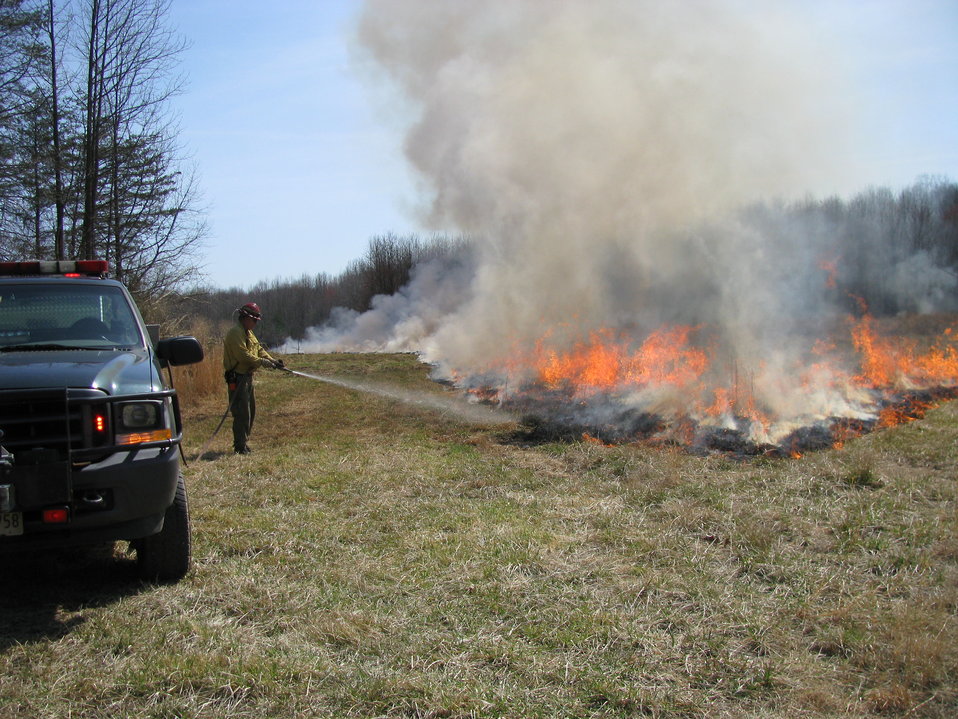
Holding the Line

Laurel, Maryland, April 14, 2012: A firefighter sprays the fireline to keep a controlled burn within the line. The burn, at Patuxent Research Refuge, was to maintain native grasslands, remove woody vegetation, and control invasive species such as Korean Lespedeza Credit: Sandy Spencer/USFWS